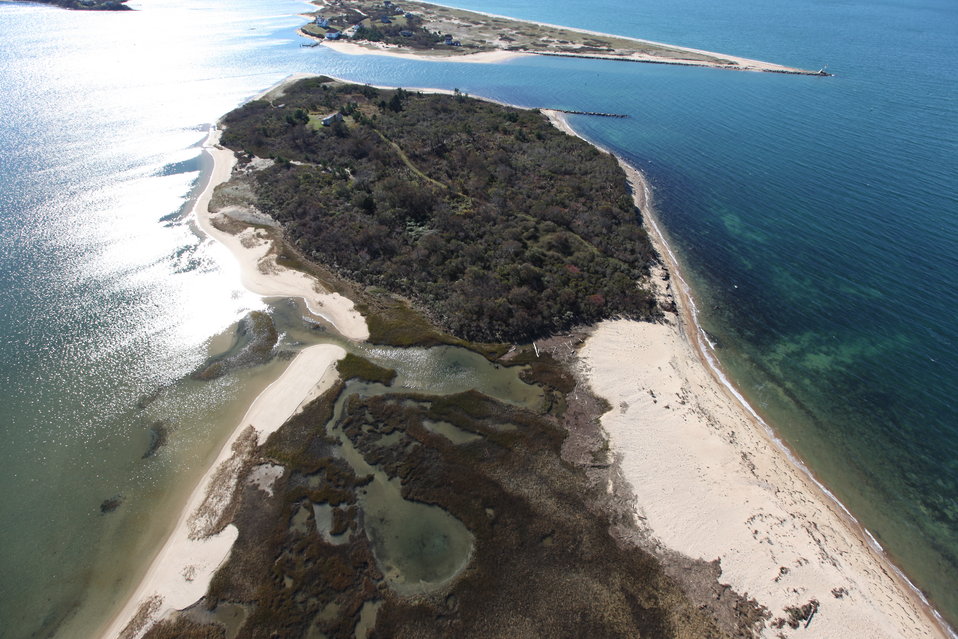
Aerial view of Block Island National Wildlife Refuge.